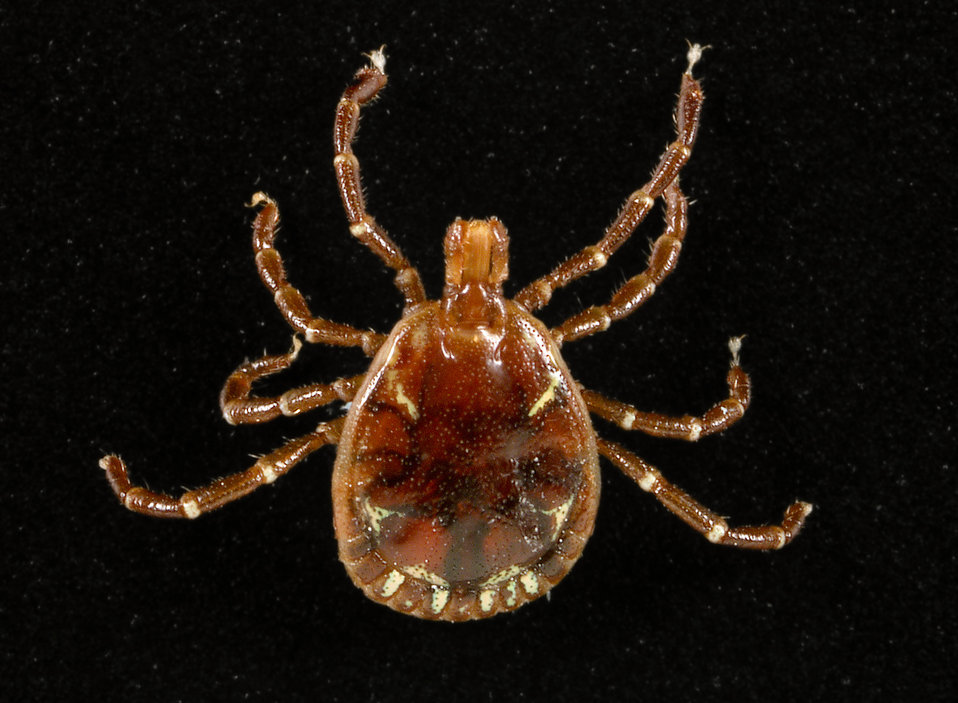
This photograph depicted a dorsal view of a male "lone star tick", Amblyomma americanum.